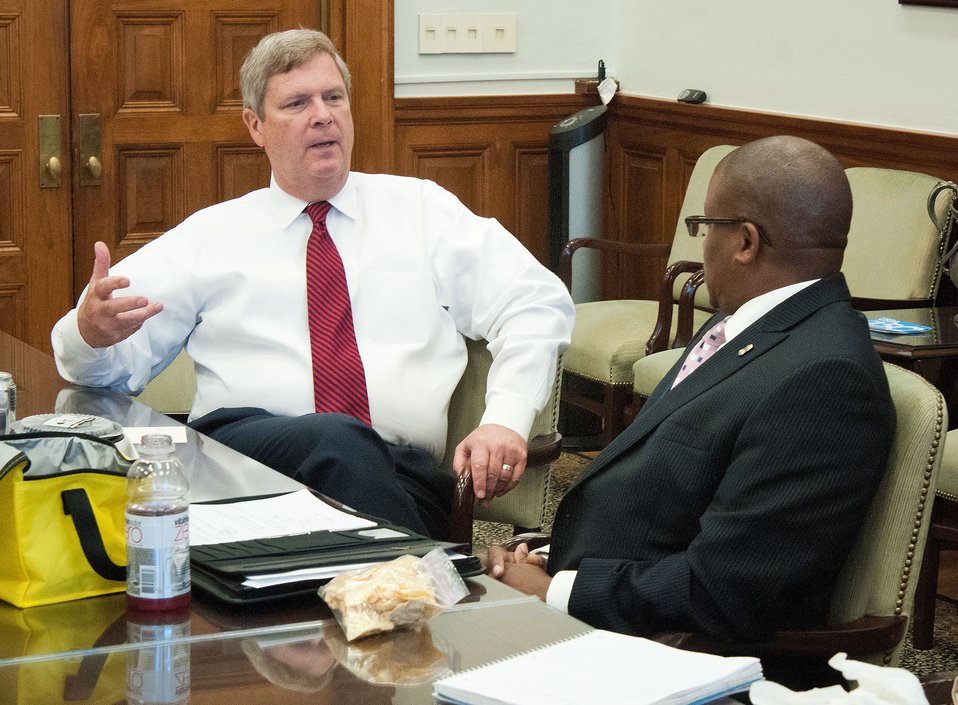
Agriculture Secretary Tom Vilsack (left) and Tony Myers (right), Departmental Management answered as well as asked questions during a Brown Bag lunch at the United States Department of Agriculture in Washington, D.C., on Wednesday, July 25, 2012. Secretary Vilsack holds the Brown Bag Lunches to discuss the role United States Department of Agriculture employees play and to thank them for their dedication and diligence.